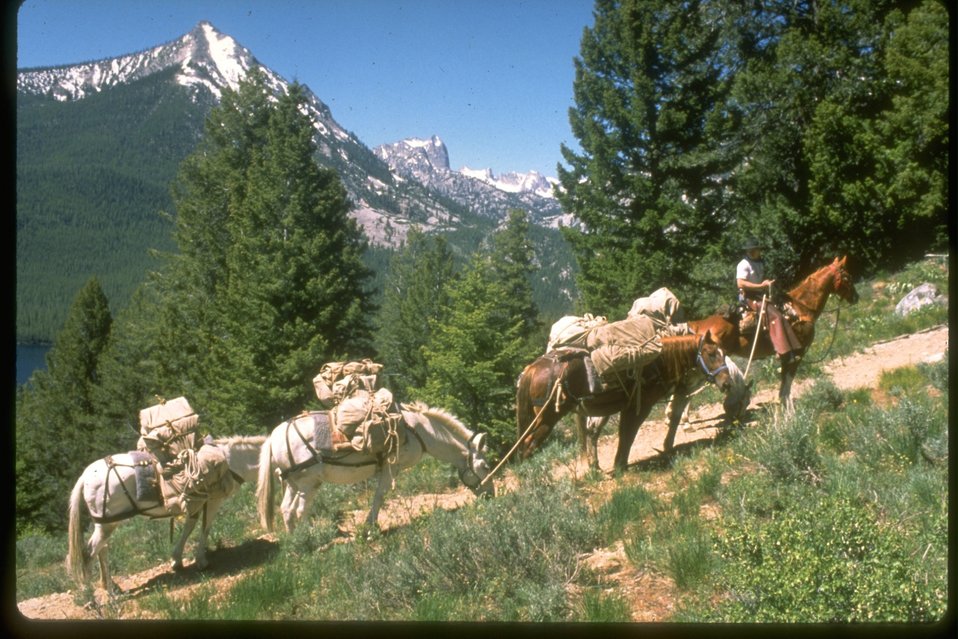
Pack train.